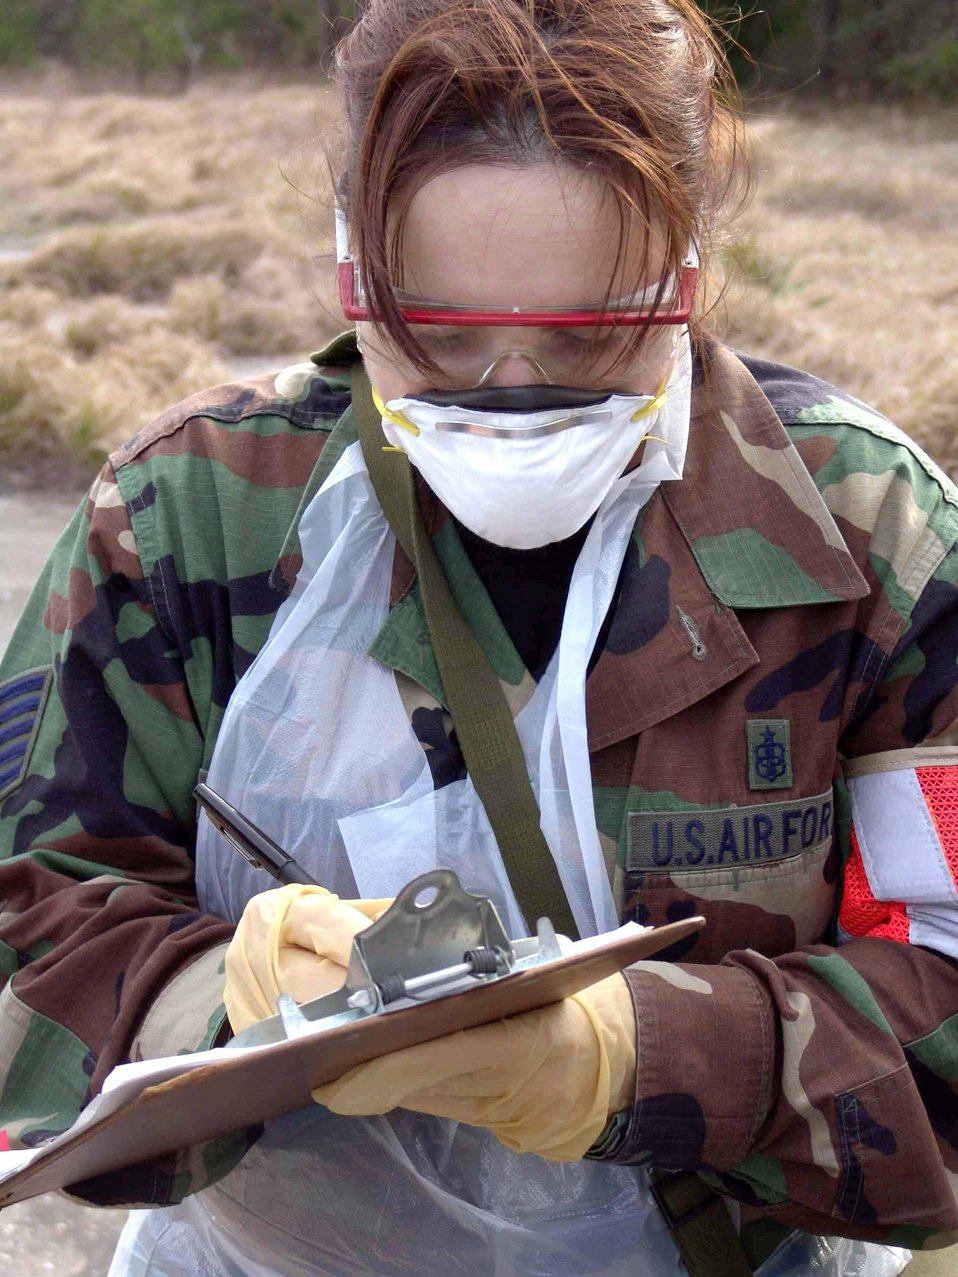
SAR teams pay close attention to detail

EGLIN AIR FORCE BASE, Fla. -- Tech. Sgt. Anna Bolton-Herndon records a finding during a training exercise with a search and recovery team here. As the SAR team recorder, she keeps track of all the identified items in a designated search area. The team is made up of at least 26 Airmen who strive to find anything out of place in the aftermath of an accident. Sergeant Bolton-Herndon is assigned to the 96th Medical Group.